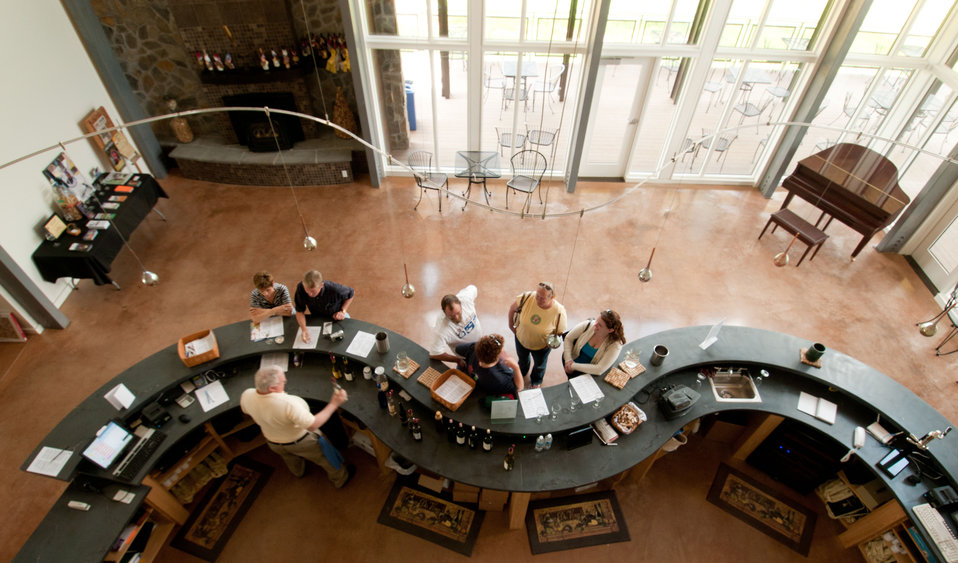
Cooper Vineyards in Louisa, VA, is the first winery on the East Coast and the second in the country to be awarded the fourth and highest, Platinum certification by Leadership in Energy and Environmental Design (LEED).
From a Virginia Wine Board Marketing Office press release, “The process of building a LEED platinum certified building was initially more expensive and arduous than co-owners, Jacque Hogge, MD and Geoffrey Cooper, MD expected, but they were able to get financial assistance from the United States Department of Agriculture. “Know that there are grants available to help with the costs of sustainable building projects,” Hogge advises to other potential green wineries. Cooper Vineyards received 2 of the 3 USDA (U.S. Department of Agriculture Rural Development (RD) Rural Energy Financing program) grants awarded in Virginia in 2010 to help with the expenses of their construction.”
Rural Energy Financing program focuses on loan guarantees, loans and grants to agricultural producers, businesses, cooperatives and rural residents for renewable energy systems and to make energy efficiency improvements.
The tasting room and building collects rainwater from the roof; uses low flow water fixtures to reduce usage by 40%; utilizes structurally insulated panels for the roof and walls; heats and cools the entire building using a geothermal system that includes pipes that are embedded in the parking lot; low-voltage LED lighting with daylight and occupancy sensors provide ample light when it is needed; a solar panel array provides more than 15% of the energy needs for the building, and much of the construction materials are from local and recycled material sources. For more information about USDA please go to www.usda.gov, Rural Development and Rural Energy Financing. LEED was developed by the U.S. Green Building Council (USGBC) is a 501 c3 non-profit organization committed to a prosperous and sustainable future for our nation through cost-efficient and energy-saving green buildings.